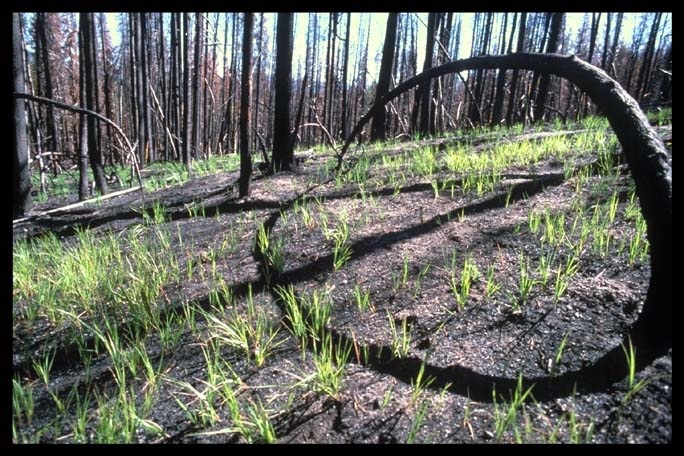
Regrowth